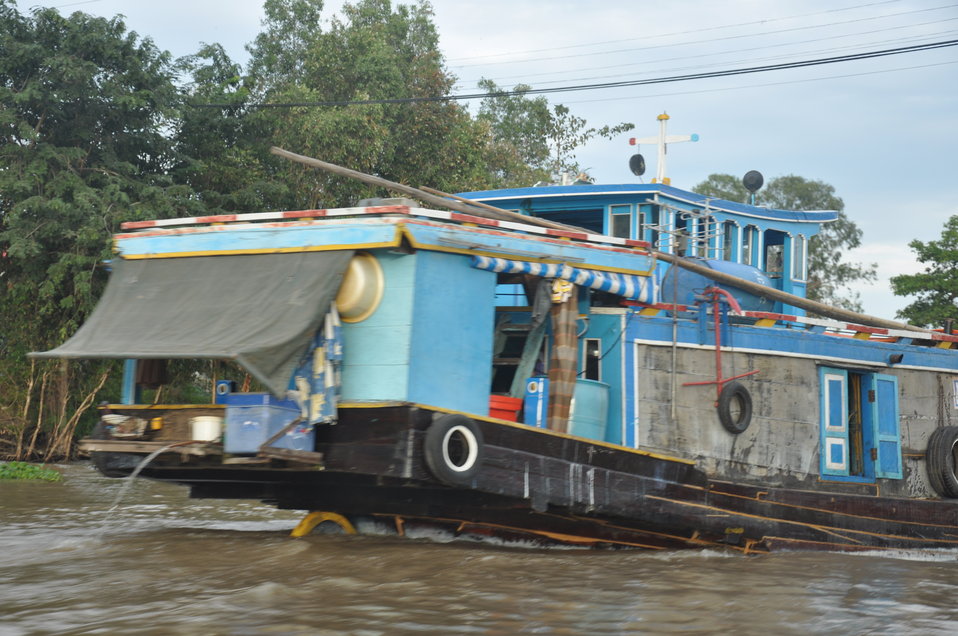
USAID supplies assistance to flood-stricken Long An Province, Tan Thanh District

USAID site visit to Long An Province to visit flood relief beneficiaries